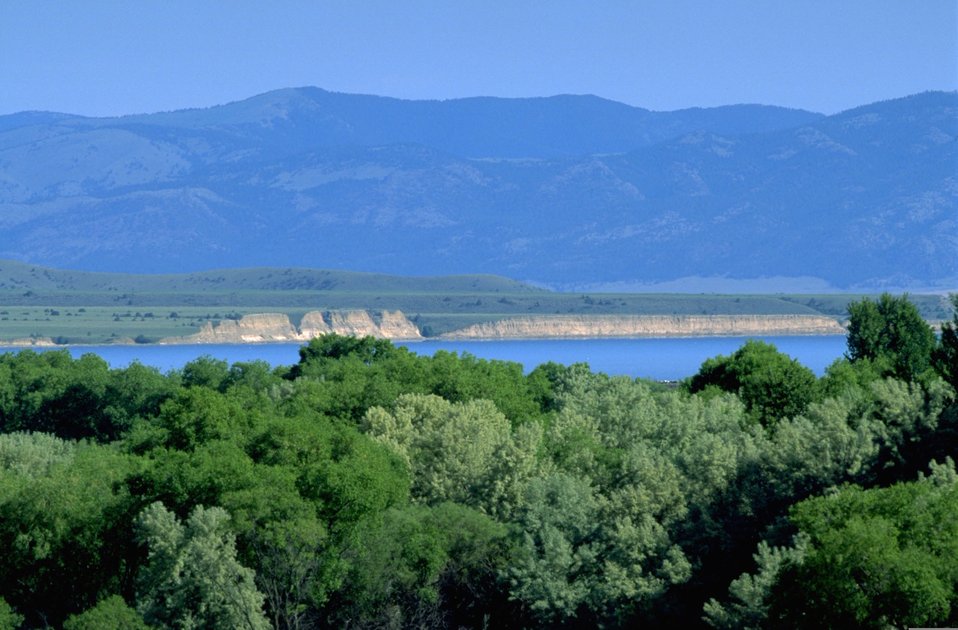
Chain Lakes